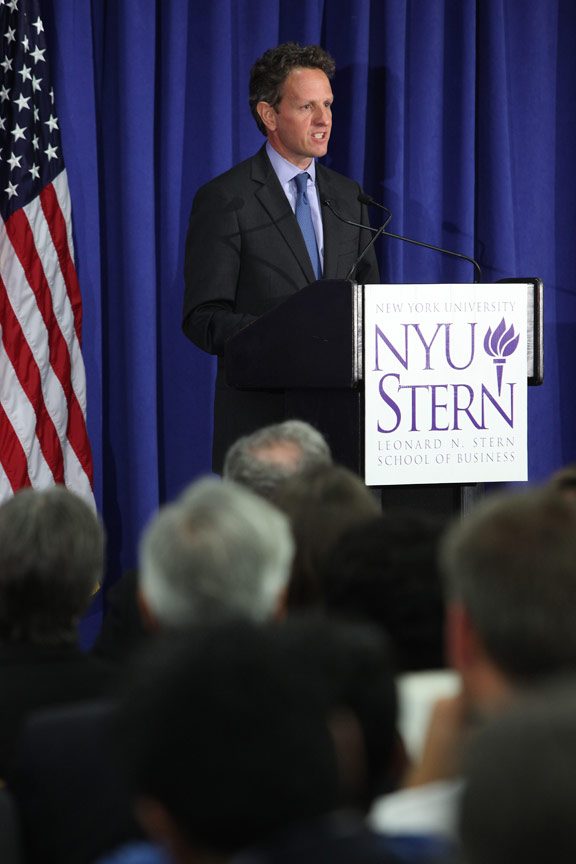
Secretary Geithner Delivers Remarks on Financial Reform at NYU, 8/2/2010

On Monday, August 2, 2010, Secretary Geithner delivered remarks at New York University's Stern School of Business in which he discussed the path forward for financial reform. He reminded the audience that the reforms that followed the Great Depression laid the foundation for decades of prosperity and led to one of the most-impressive records of investment, innovation and growth any major economy had ever seen.